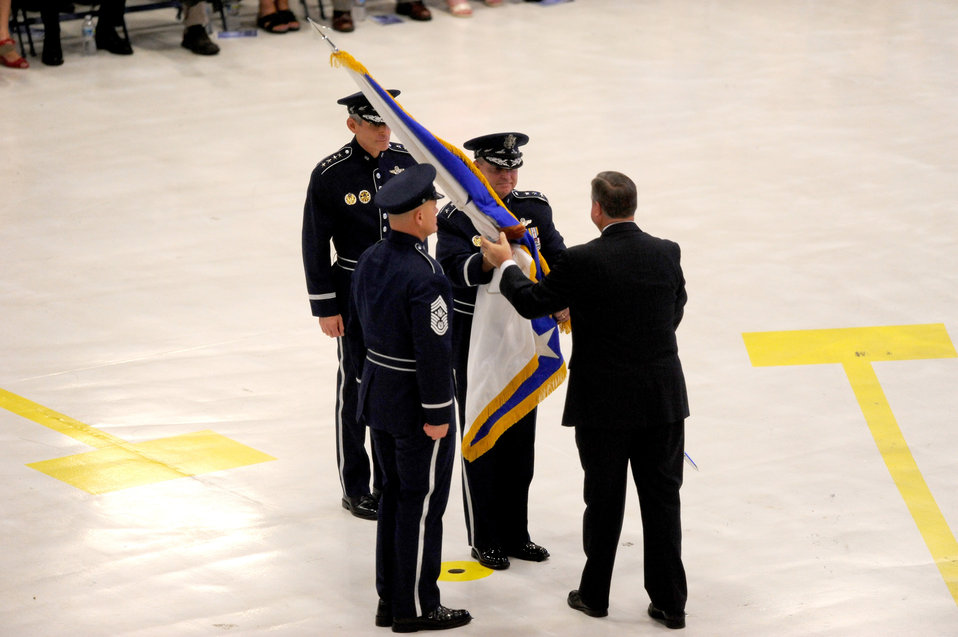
Welsh ‘humbled’ to serve as Air Force chief of staff

Secretary of the Air Force Michael Donley passes the chief of staff flag to Gen. Mark A. Welsh III during a ceremony at Joint Base Andrews, Md., Aug. 10, 2012. Prior to his new position, Welsh was the commander of U.S. Air Forces in Europe.